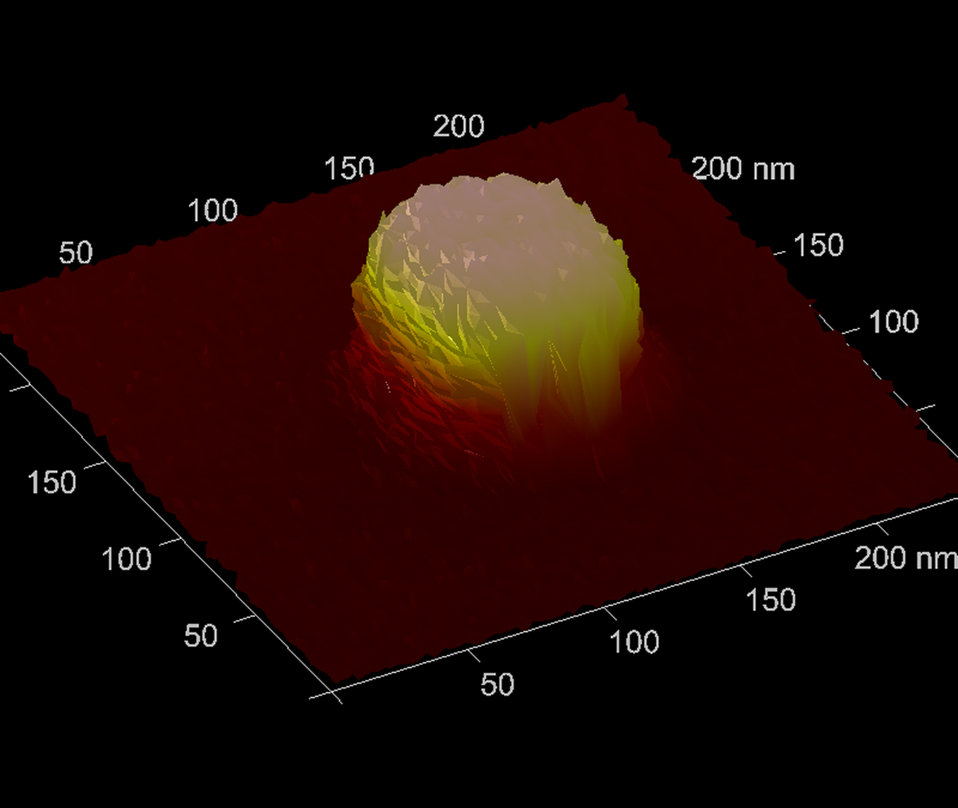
Hybrid Metrology Computer Chip

This tiny silicon pillar, measuring less than 100 nanometers along any of its sides, is the sort of computer chip feature that manufacturers now can measure more precisely with NIST's hybrid metrology method, which can reduce the nagging uncertainties that have long plagued industry's measurement efforts.